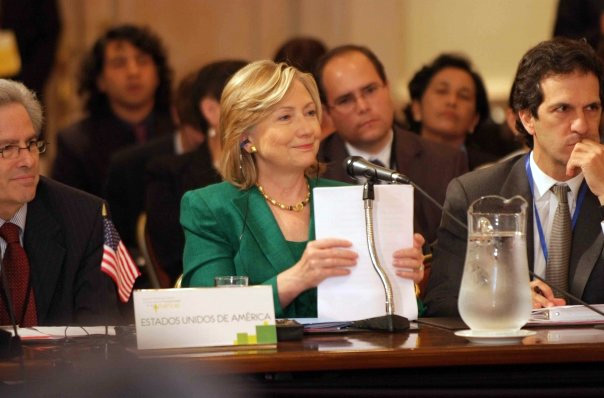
Secretary Clinton Speaks at Pathways to Prosperity

U.S. Secretary of State Hillary Rodham Clinton sits between (L) Assistant Secretary of Western Hemisphere Affairs Arturo Valenzuela and (R) Colombian Foreign Minister Jaime Bermudez at the Pathways to Prosperity Conference in San José, Costa Rica, March 4, 2010.